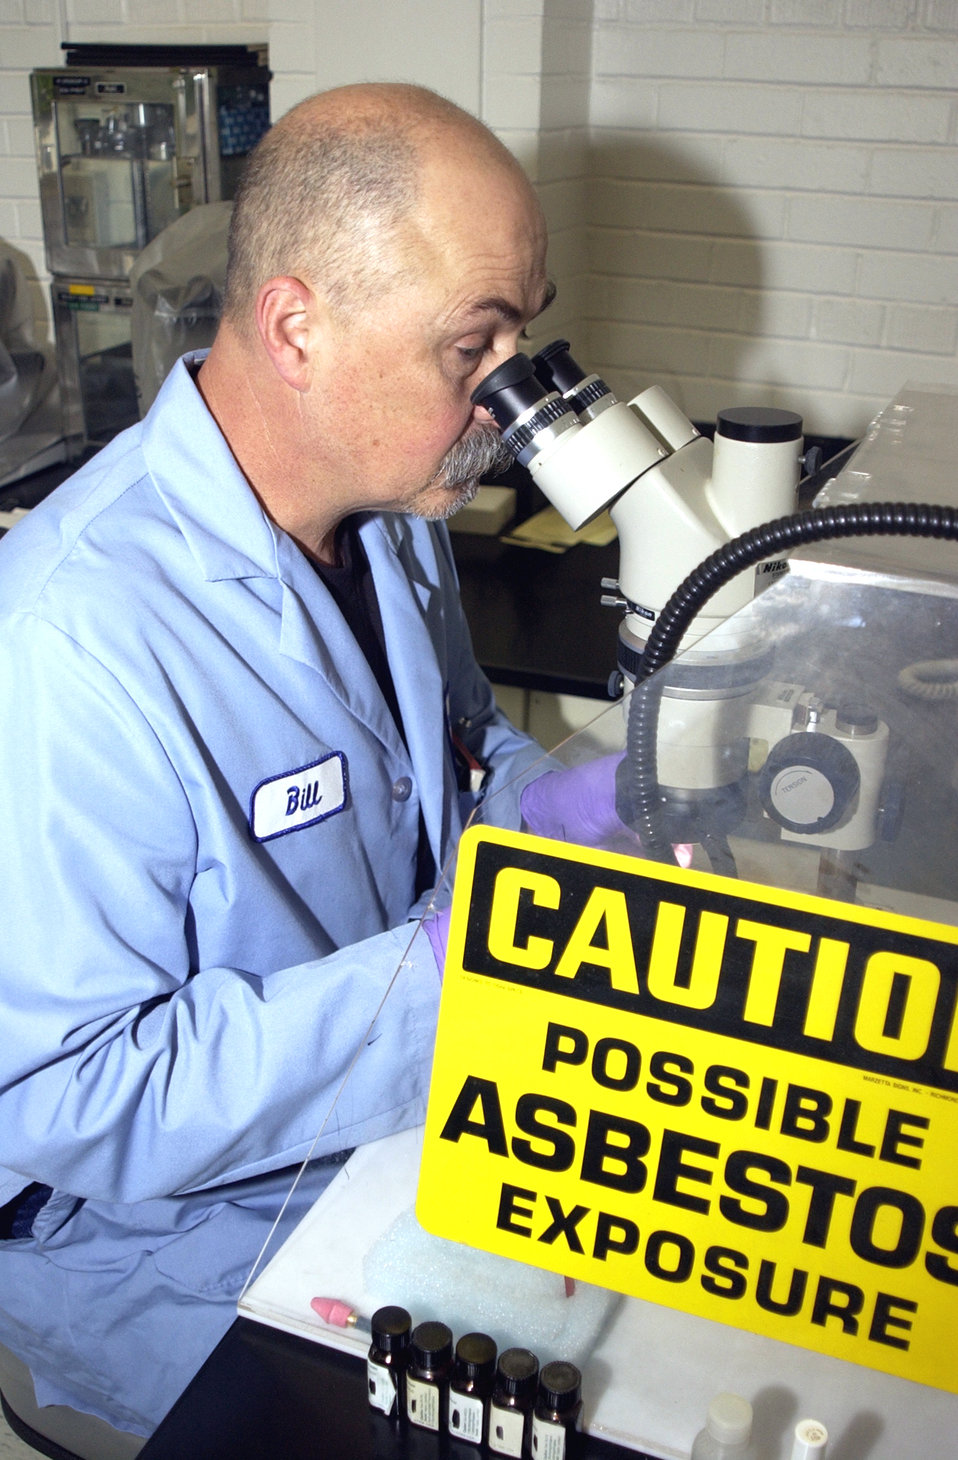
Hill employees get down to details

HILL AIR FORCE BASE, Utah -- Bill Comeau, an engineering technician, searches for asbestos fibers under a microscope.